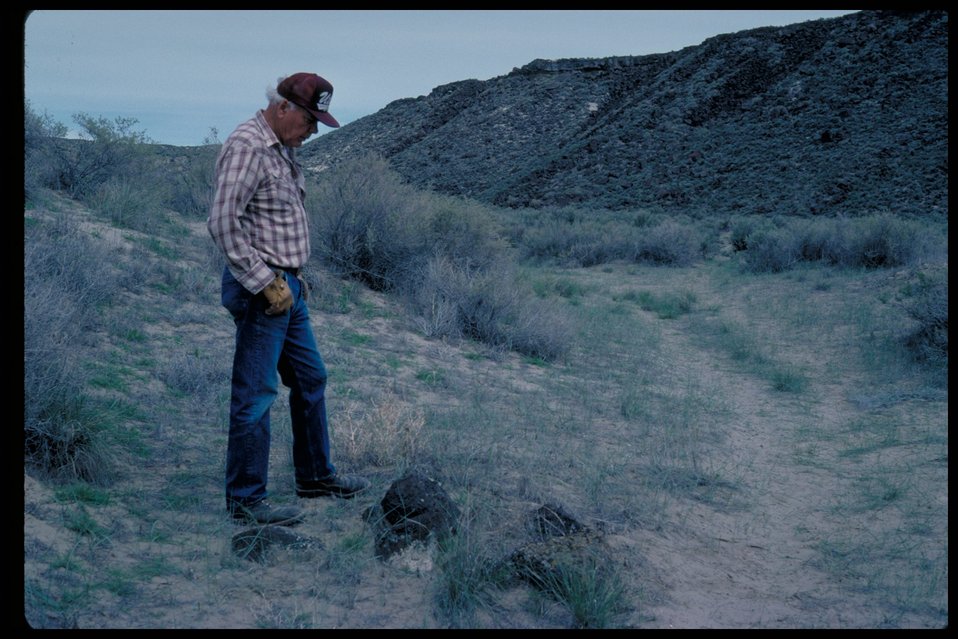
Oregon Trail north of Silver Creek Lower Snake River District